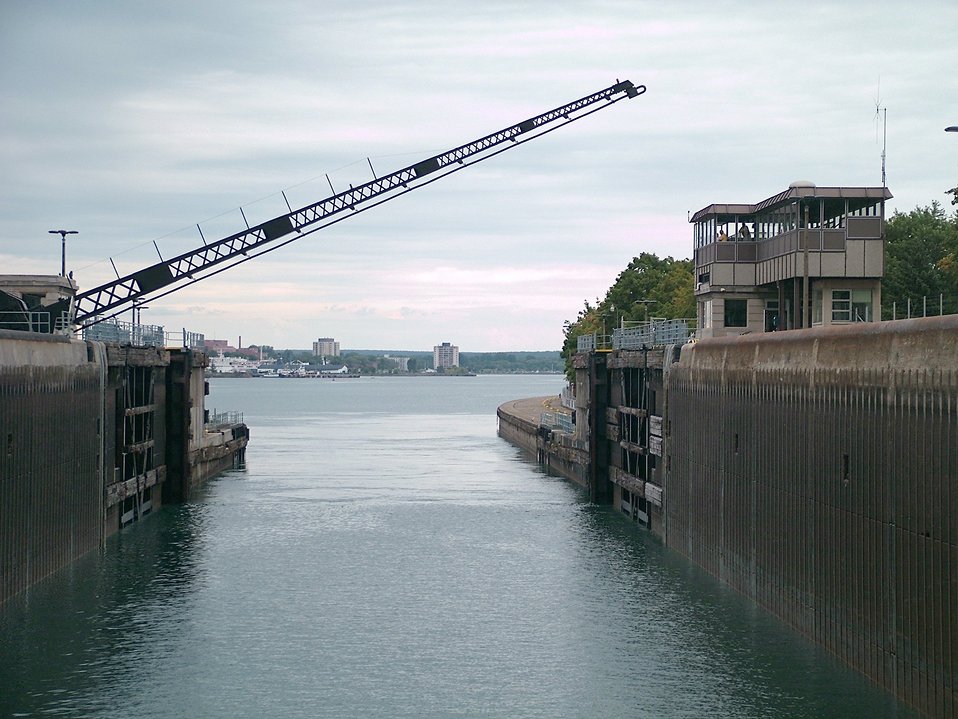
Soo Locks